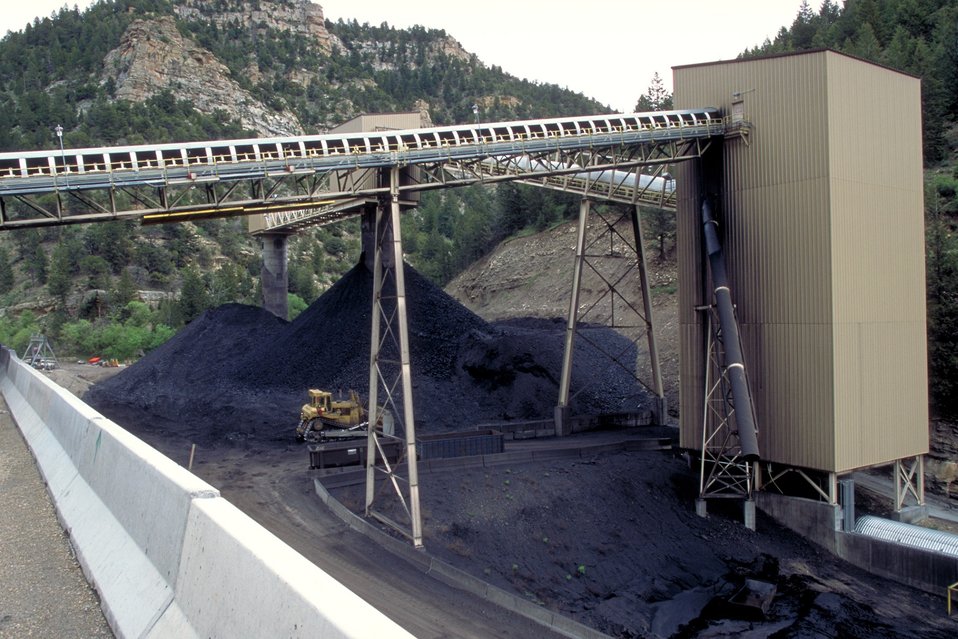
Coal production near Price, Utah.